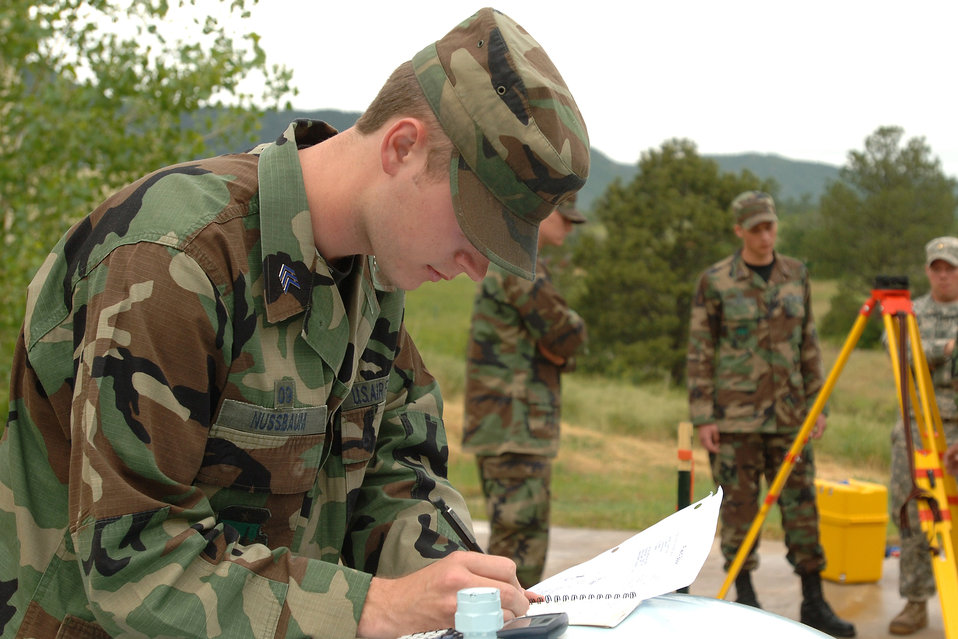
Summer lab gives cadets engineering experience

Air Force Academy Cadet 2nd Class John Nussbaum directs a survey team during the Field Engineering and Readiness Laboratory field course at the Academy. The course exposes cadets to several aspects of civil engineering, including heavy equipment operation, steel bridge construction, designing and pouring concrete beams and paving portions of a road.